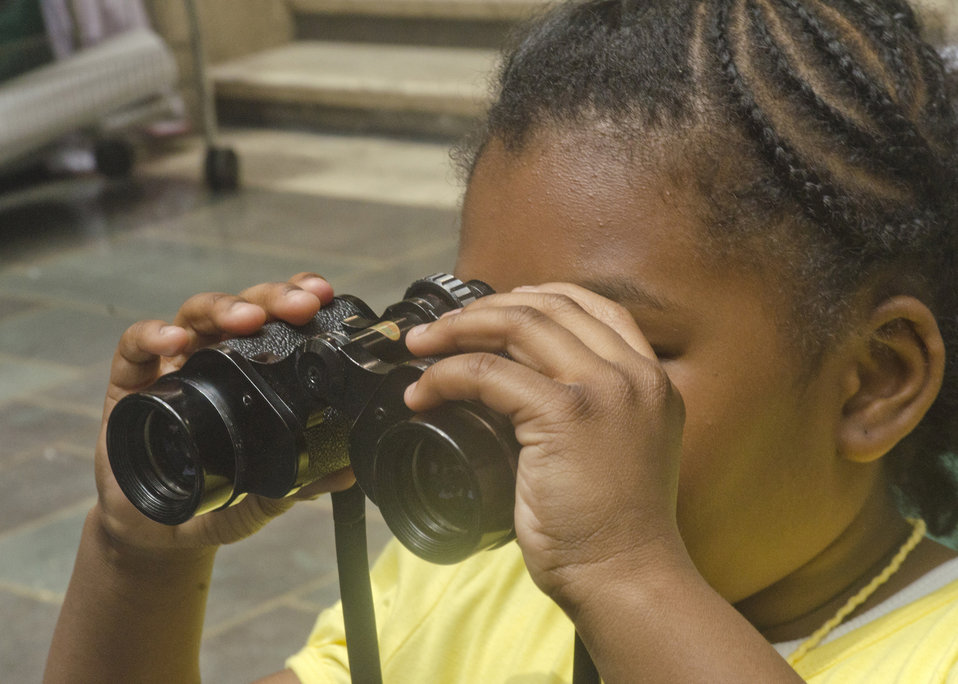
The U. S. Department of Agriculture (USDA) held its annual “Take Your Child to Work Day” on the patio of the Whitten Building, in Washington, DC, on Thursday, April 28, 2011. The program is designed to introduce young people to USDA’s wide range of responsibilities and services. A youngster checks out binoculars at the Federal Protection Service exhibit at Agriculture’s “Take Your Child to Work Day” event.